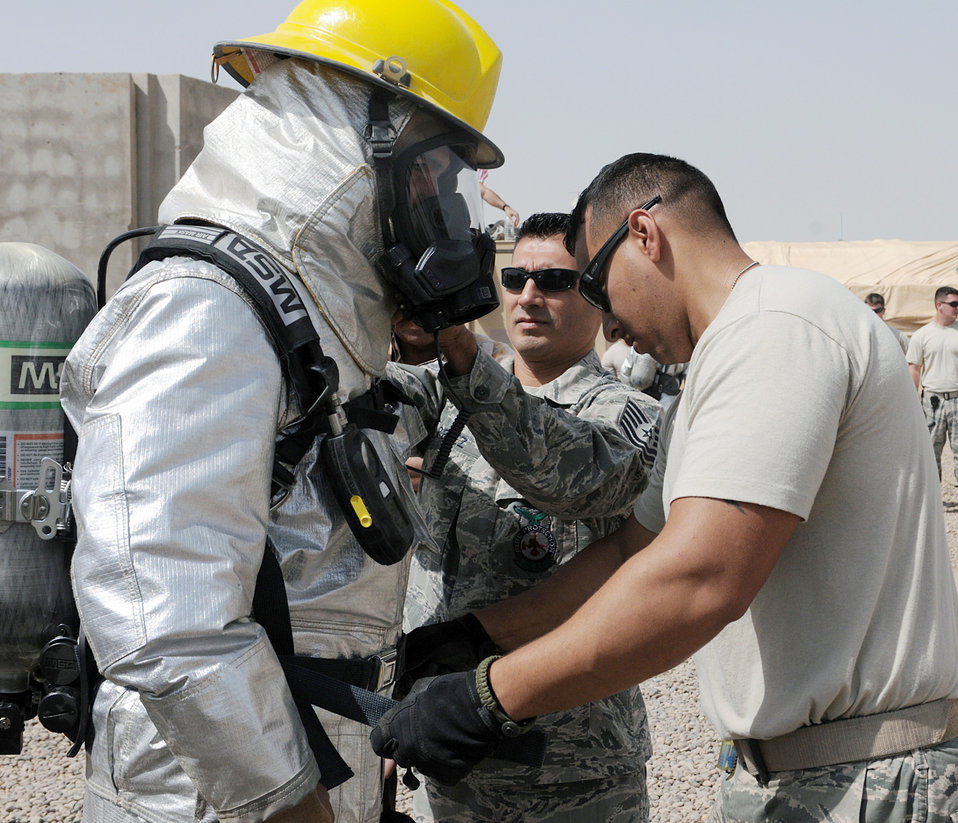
Iraqi firefighters training

Staff Sgt. Stephen Sanabria (right) and Tech. Sgt. Stephen Perez help an Iraqi firefighter don his personal protective equipment prior to fighting a fire April 30, 2010, at Joint Base Balad, Iraq. Sergeant Sanabria is a firefighter with the 332nd Civil Engineer Squadron. Sergeant Perez is an assistant chief of fire prevention with the 332nd Civil Engineer Squadron.